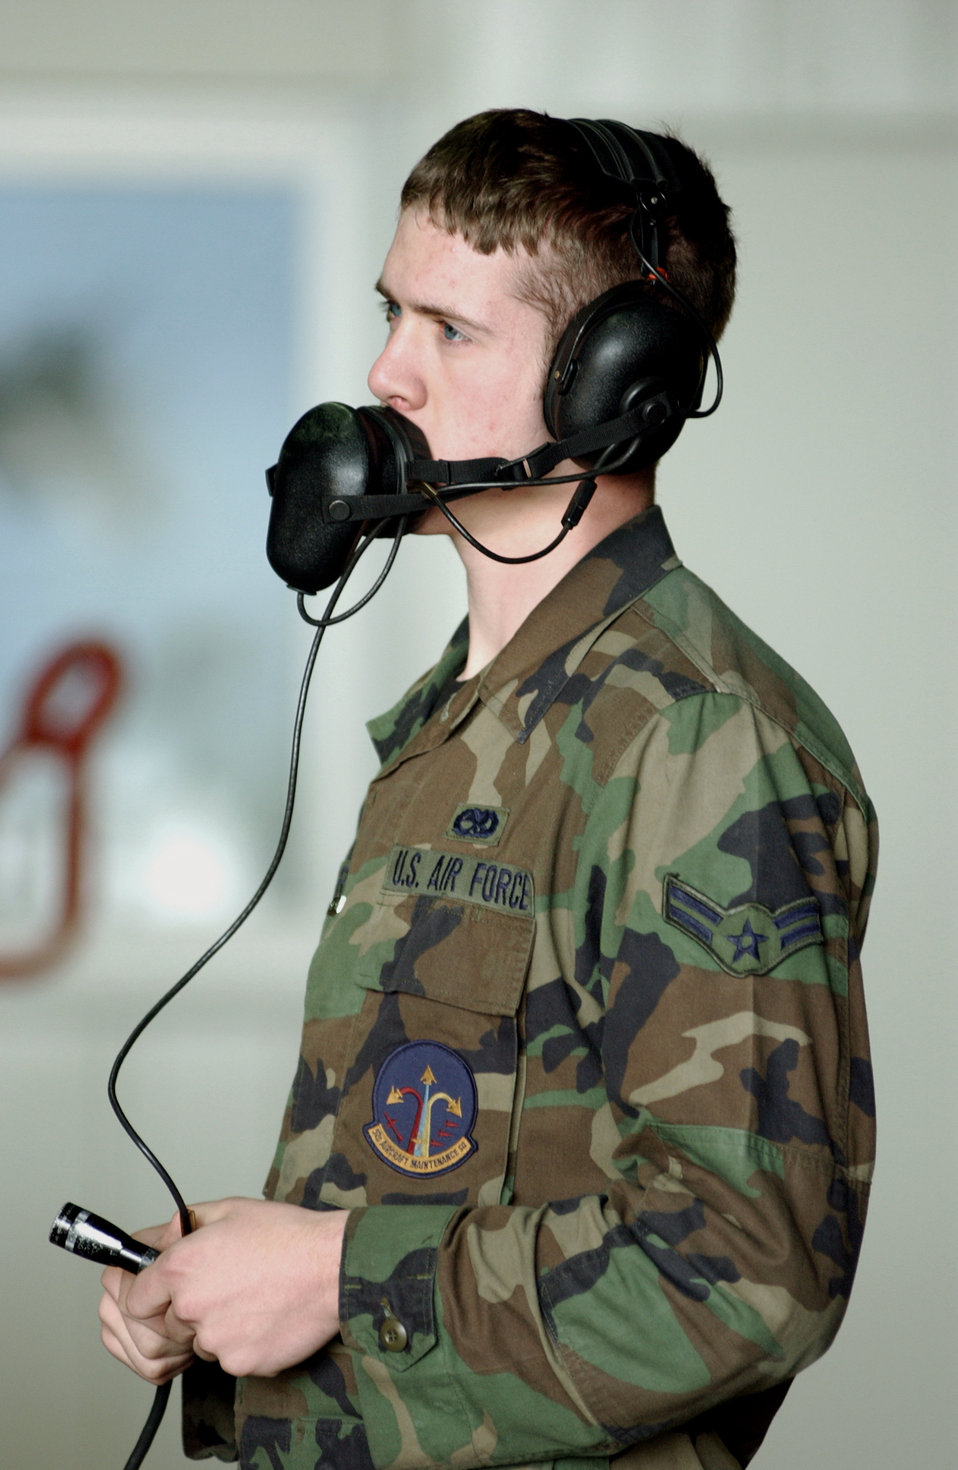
Final call

SPANGDAHLEM AIR BASE, Germany -- Airman First Class William Burrows communicates with a pilot to ensure that all checks of the outer and inner operational functions of the aircraft have been completed before taking off here April 26. Airman Burrows is assigned to the 52nd Aircraft Maintenance Squadron.